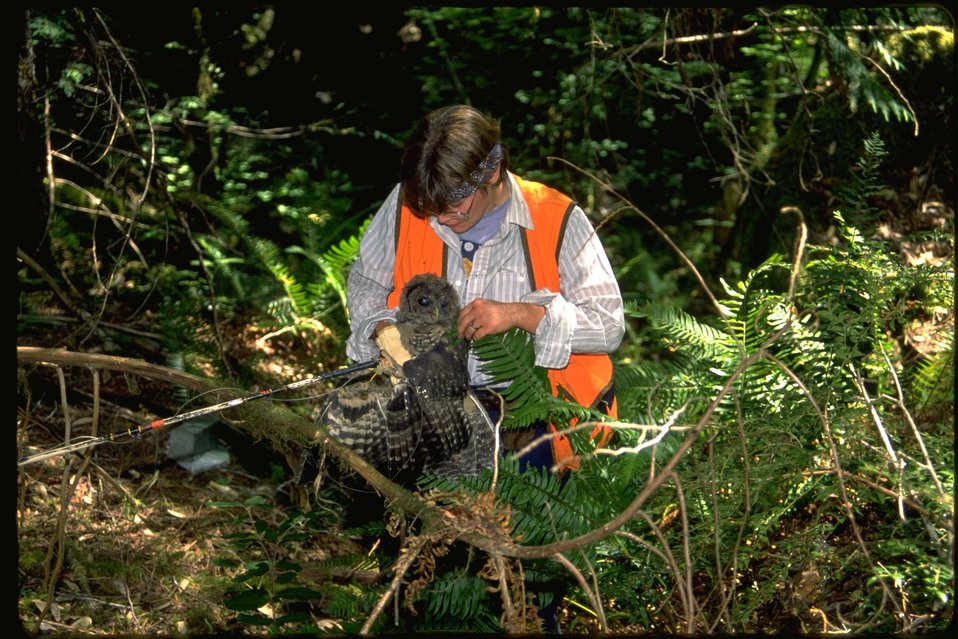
Joanne removing noose from baby Northern Spotted owl.